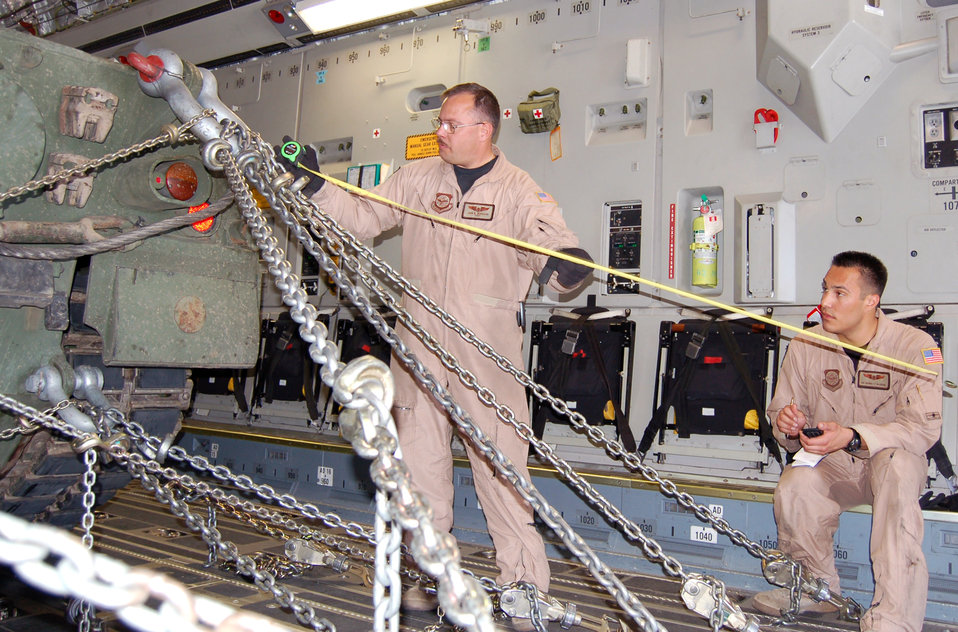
'Spirit of McChord' gives Canadians lift

Tech. Sgt. John Woodard (left) and Senior Airman Jeramia Valentine calculate the chain strength needed to ensure the Canadian Leopard tank will not move during a flight. Both Airmen are deployed to Manas Air Base, Kyrgyzstan, from the 10th Airlift Squadron at McChord Air Force Base, Wash.